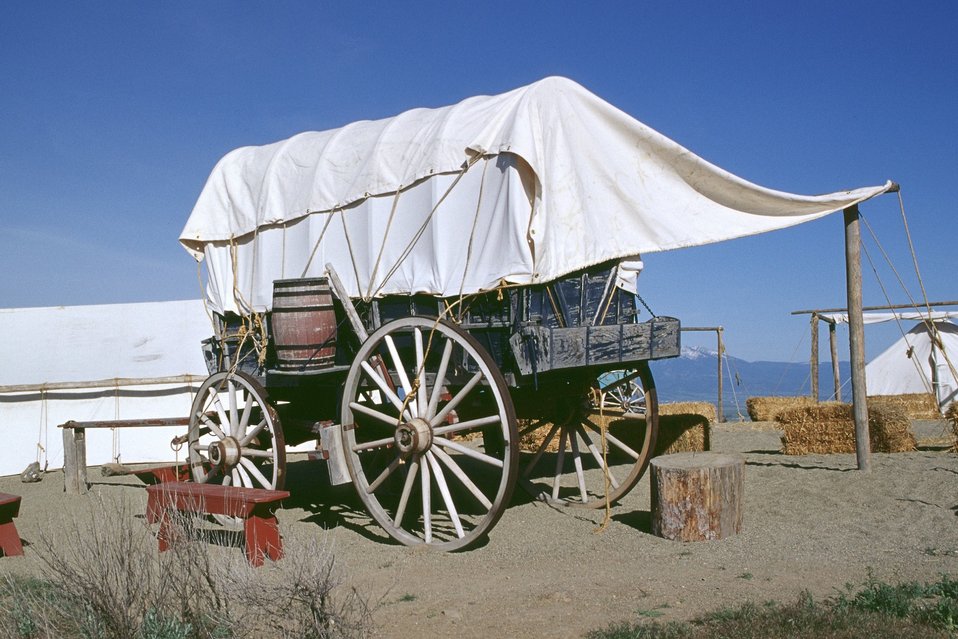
Covered wagon encampment from wagon train reenactment. NHOTIC 10th Anniversary.